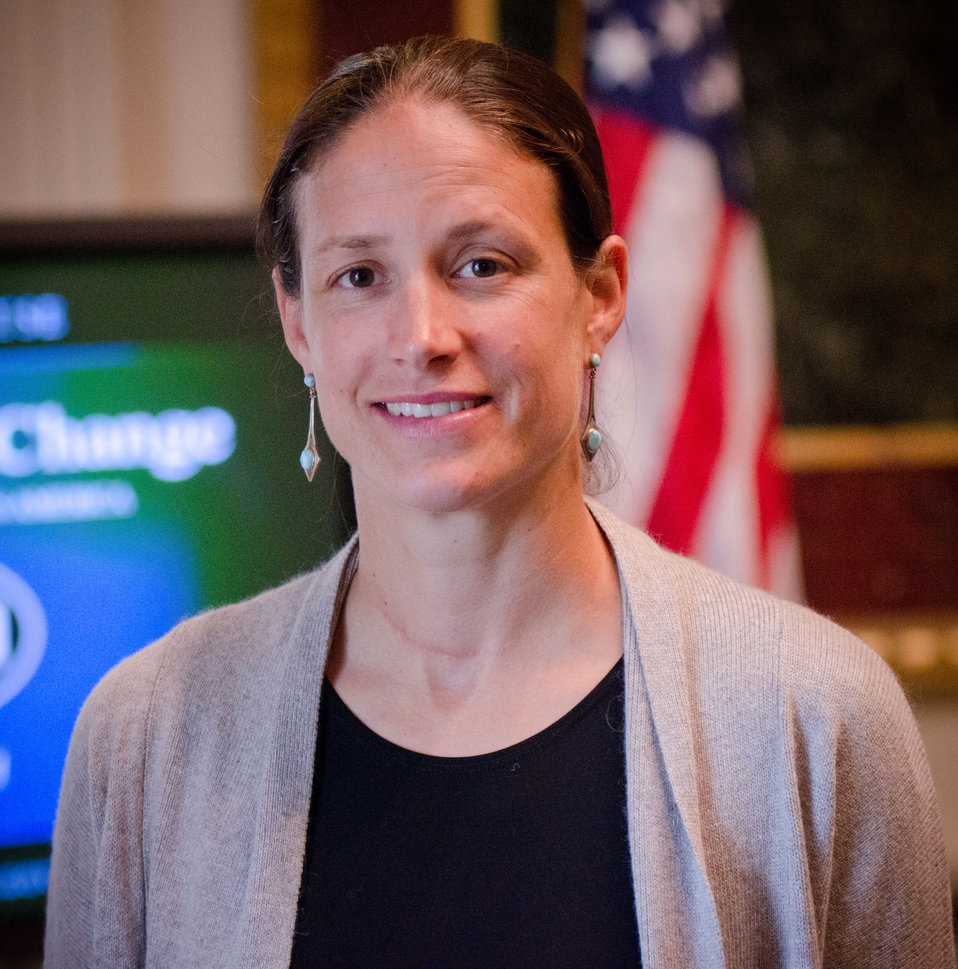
Champion of Change recipient Jessica McAtamney stands in front of the Champions of Change sign at the Executive Office Building in Washington, D.C. on Tuesday, Oct. 9, 2012. McAtamney is an agricultural educator at W.B. Saul High School of Agricultural Sciences in Philadelphia, PA. Jessica serves as FFA advisor to one the nation’s largest FFA chapters, assisting Saul’s fourteen agricultural educators to bring FFA alive to the urban Philadelphia chapter. As the Land Judging Career Development Event Coach and Agriscience Fair coordinator, Jessica facilitates the Chapter’s participation in local leadership events, competitions, and conferences. This is just one more chapter in Jessica’s story of public service, as she is a returned Peace Corps volunteer and a former participant in the Fulbright Japan-U.S. Teacher Exchange Program for Education for Sustainable Development.